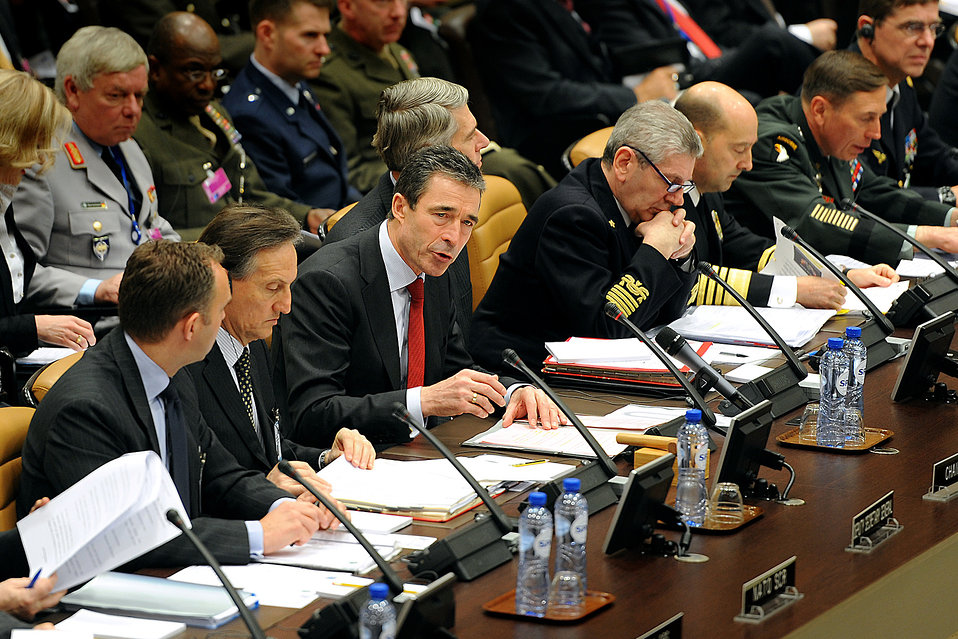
NATO assumes responsibility for no-fly zone

NATO Secretary General Anders Fogh Rasmussen (third from left) opens a meeting of NATO ministers of defense with non-NATO International Security Assistance Force contributing nations at the NATO headquarters in Brussels, Belgium, March 11, 2011.